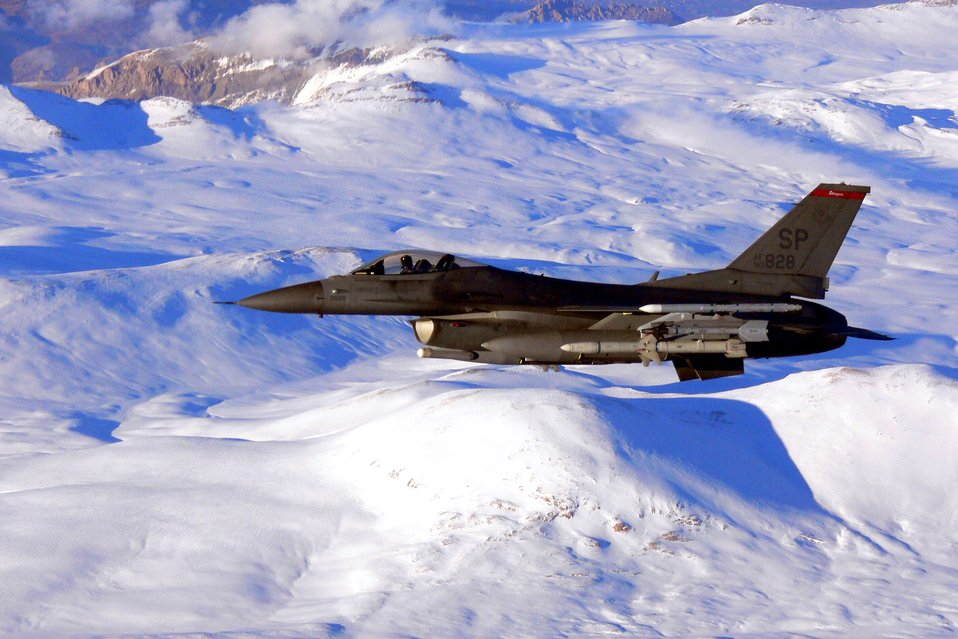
Anatolian Eagle

An F-16 Fighting Falcon performs combat air patrol over the glaciers of central Turkey during Exercise Anatolian Eagle. About a dozen F-16s and more than 200 Airmen traveled from Spangdahlem Air Base, Germany, to participate in the NATO exercise at Konya Air Base, Turkey.